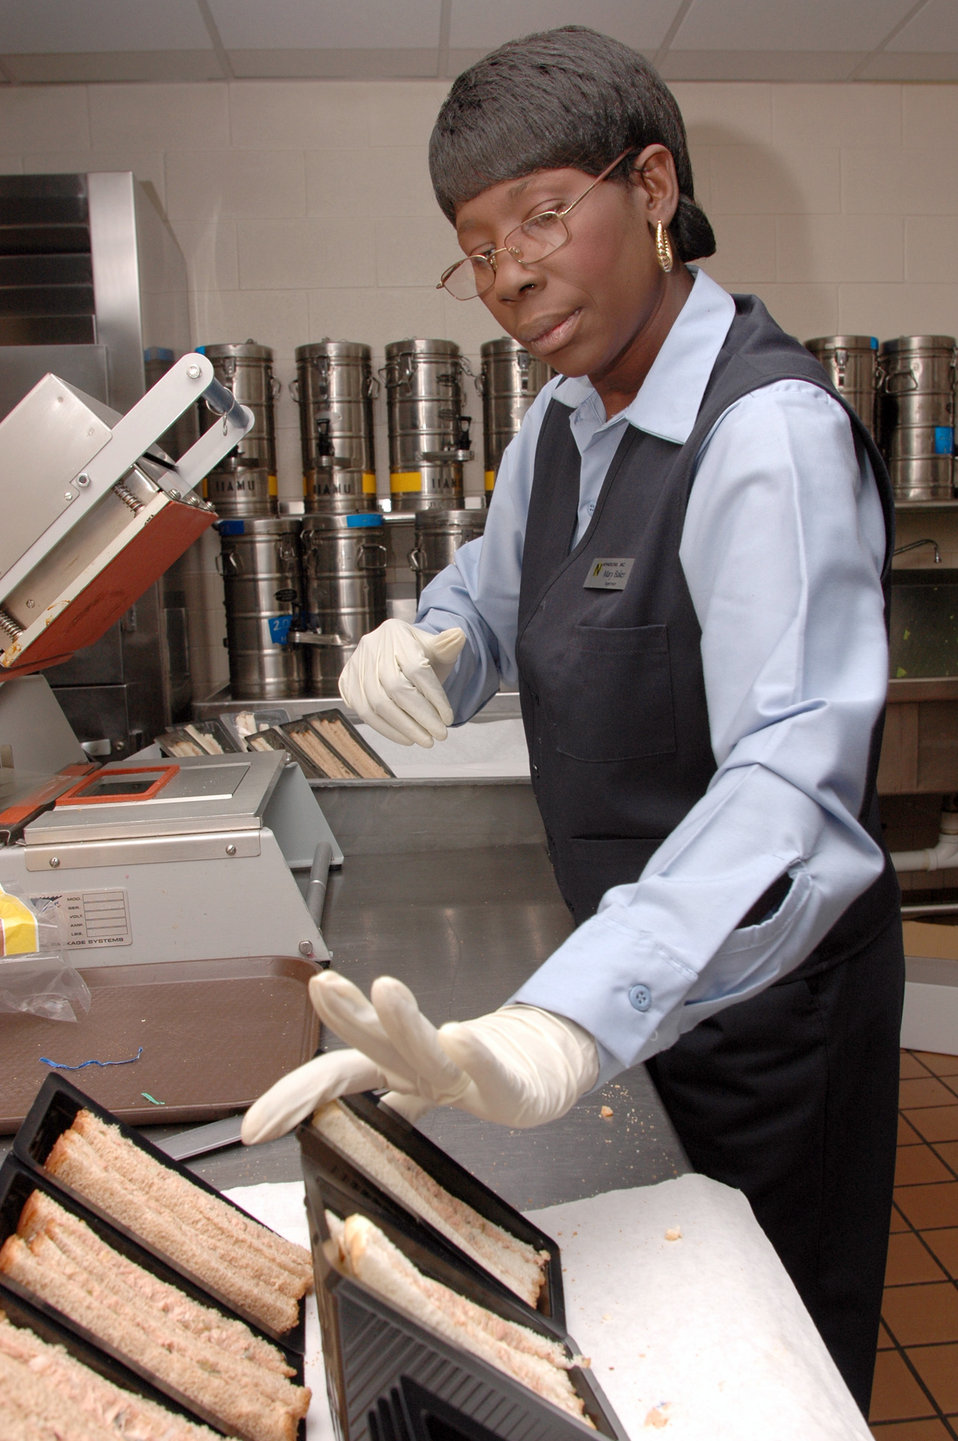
One flight -- several missions

BARKSDALE AIR FORCE BASE, La. (AFPN) -- Mary Baker makes and seals 100 to 110 sandwiches for the lunch line at the Touch-N-Go. The flight kitchen provides hot meals as well as boxed. Ms. Baker is a civilian supervisor.